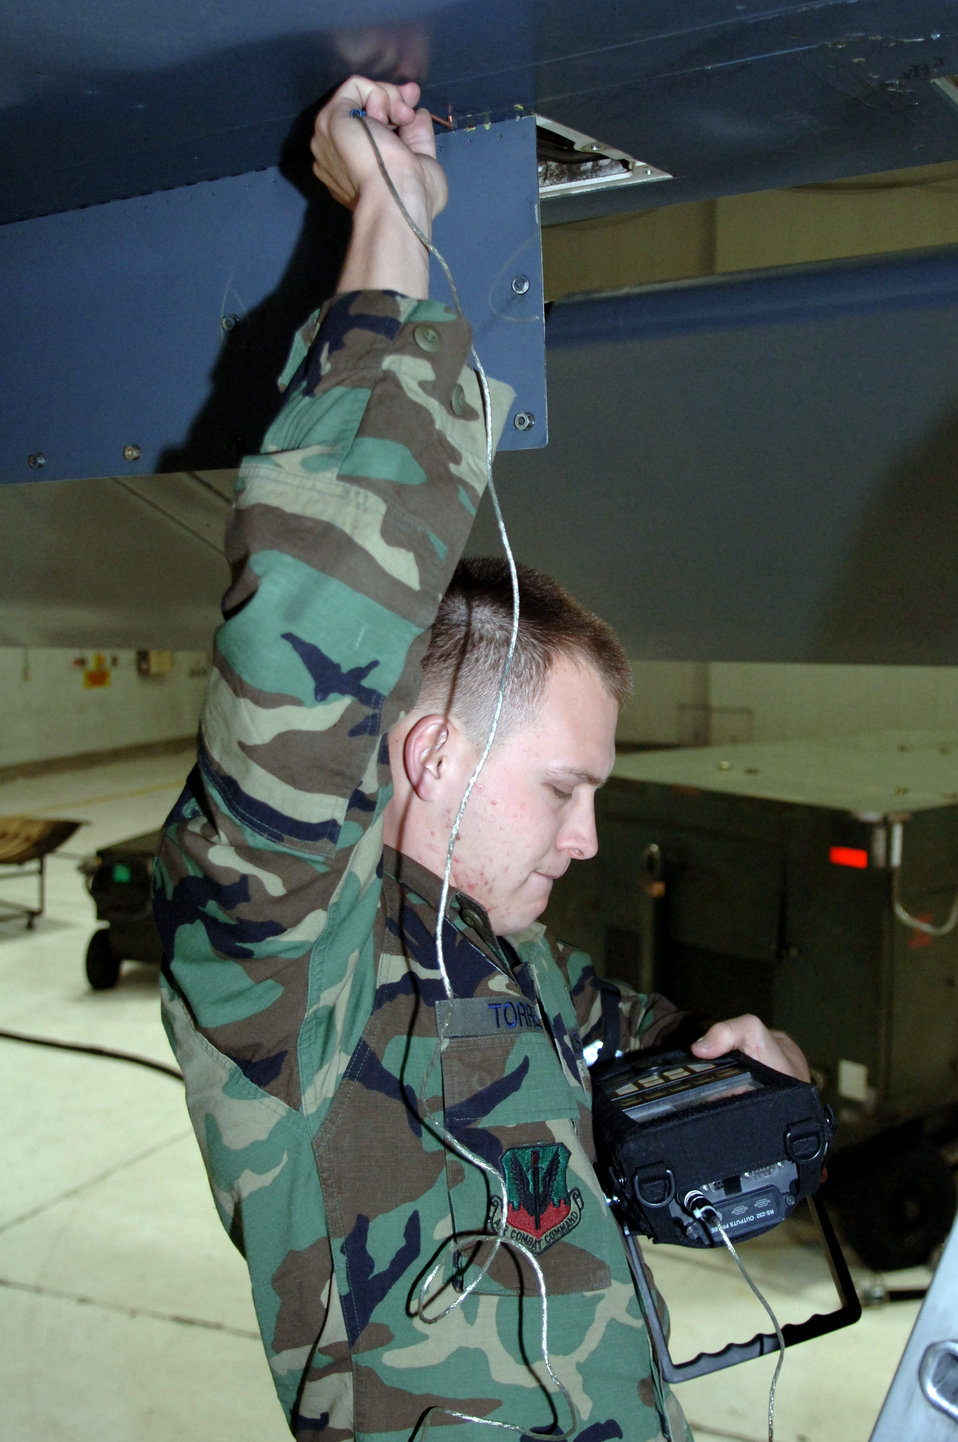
Inspections technician know-how

Airman 1st Class Ehud Torres inspects for possible cracks on the B-1B Lancer using the Nortec 2000D March 19 at Ellsworth Air Force Base, S.D. Airman Torres is a nondestructive inspections technician with the 28th Maintenance Squadron.